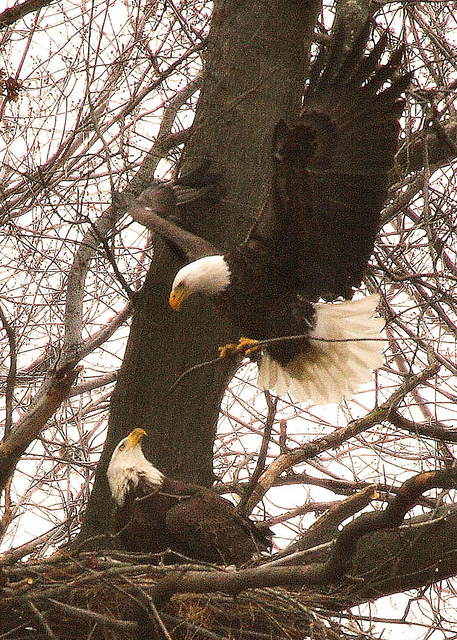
eagles add to their nest

John H. Heinz National Wildlife Refuge, PA